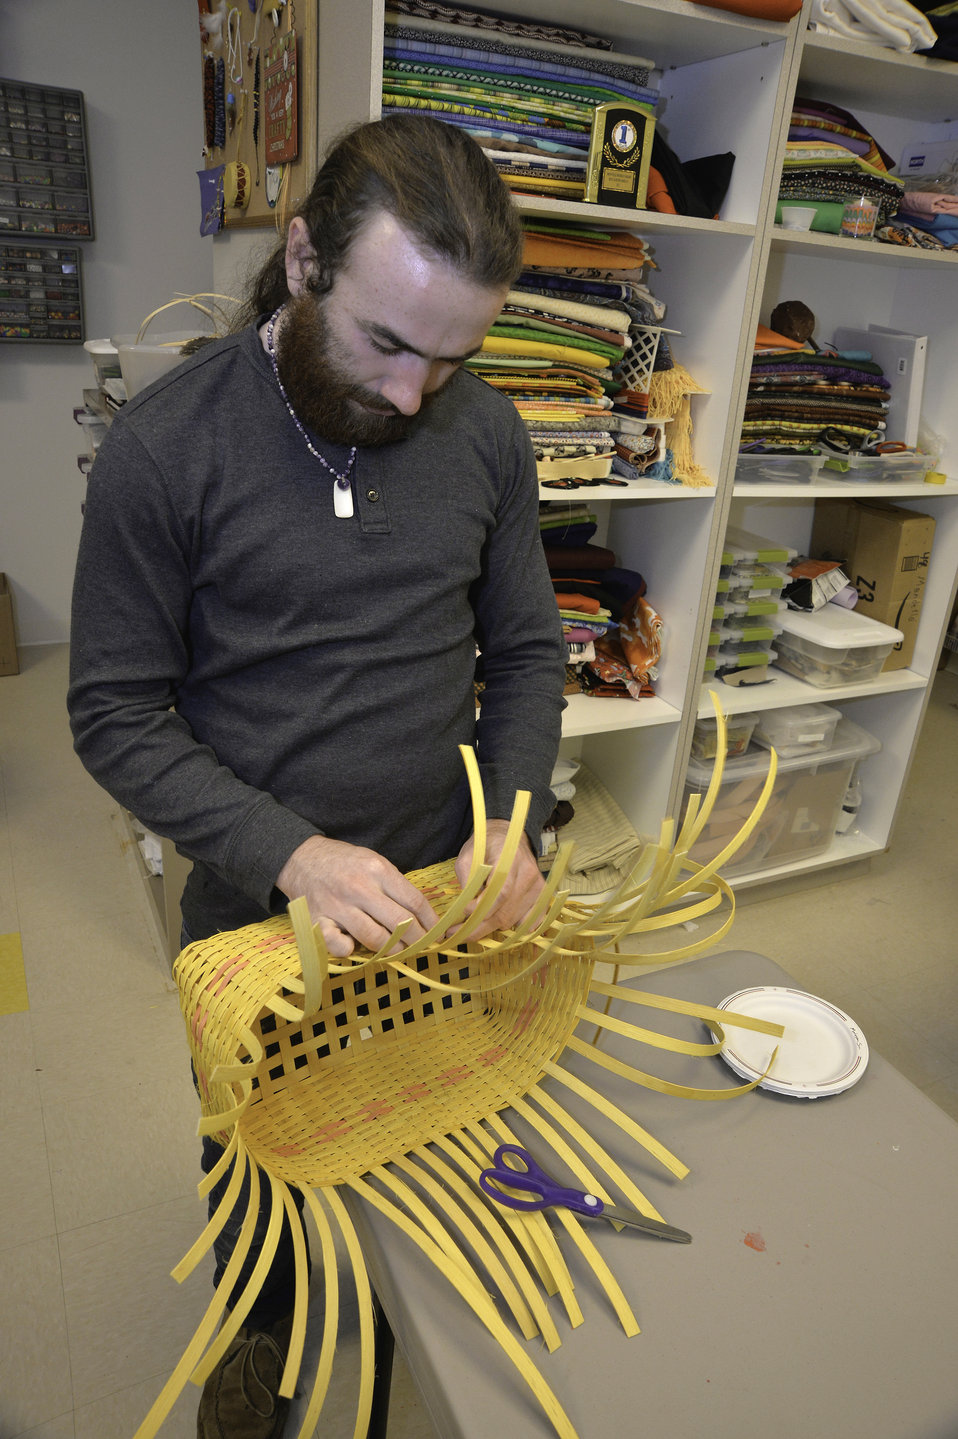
Mohegan members work on Native American crafts at the Arts and Crafts center in the Mohegan Tribe Community Center and Government Building in Uncasville, CT on Nov. 19, 2013. A U.S. Department of Agriculture (USDA) Rural Development (RD) Community Facility Loan was provided to the Mohegan Tribe for the construction of the Mohegan Tribe Community Center and Government Building in Uncasville, CT. USDA’s RD Community Facilities Programs makes and guarantees loans to develop essential community facilities in rural areas and towns of up to 20,000 in population. Loans and guarantees are available to public entities such as municipalities, counties, parishes, boroughs, and special-purpose districts, as well as to non-profit corporations and tribal governments. The 160,000 square foot building Center hosts an exhibit celebrating federal recognition, history of Mohegan Chiefs, a new Library and Archives space, new Arts and Crafts room, a new gymnasium, and a new community room to enjoy food and family. The Center will continue the Tribe’s plan for growth and meeting the needs of its members.